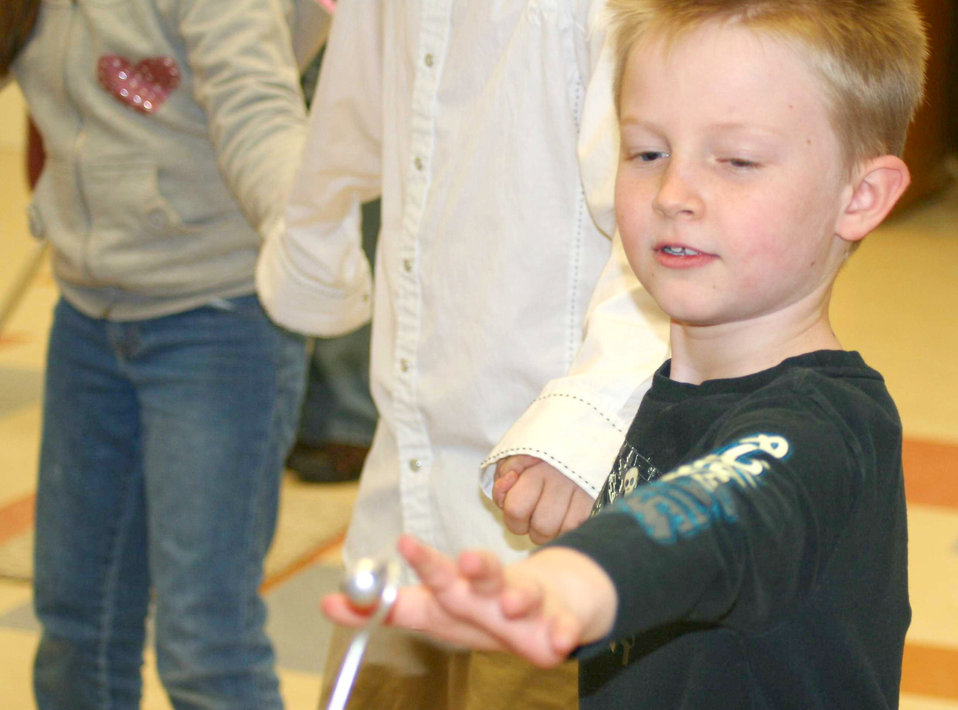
Physics really is

Third grader Annione Platten, from West Elementary School in Colorado Springs, Colo., reaches to close a human circuit at a